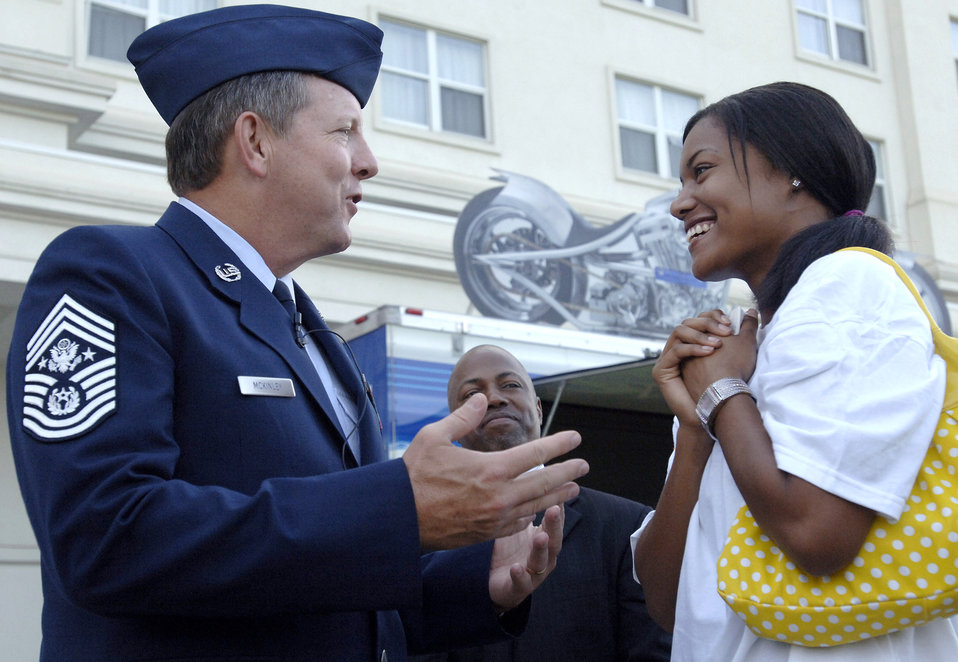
Air Force Week Atlanta kicks off

Chief Master Sergeant of the Air Force Rodney J. McKinley talks with one of the Air Force's newest recruits, Charity Pulliam, who enlisted into the Air Force during a proclamation ceremony to begin Air Force Week Atlanta Oct. 8. The Air Force Week program is meant to increase the awareness and support of the public by informing them and involving them in activities that showcase the Air Force's diverse capabilities and missions, its accomplishments and the sacrifice of its Airmen. Atlanta is one of six cities throughout the country chosen to host an Air Force Week Oct. 8 to 14. The theme for the year is